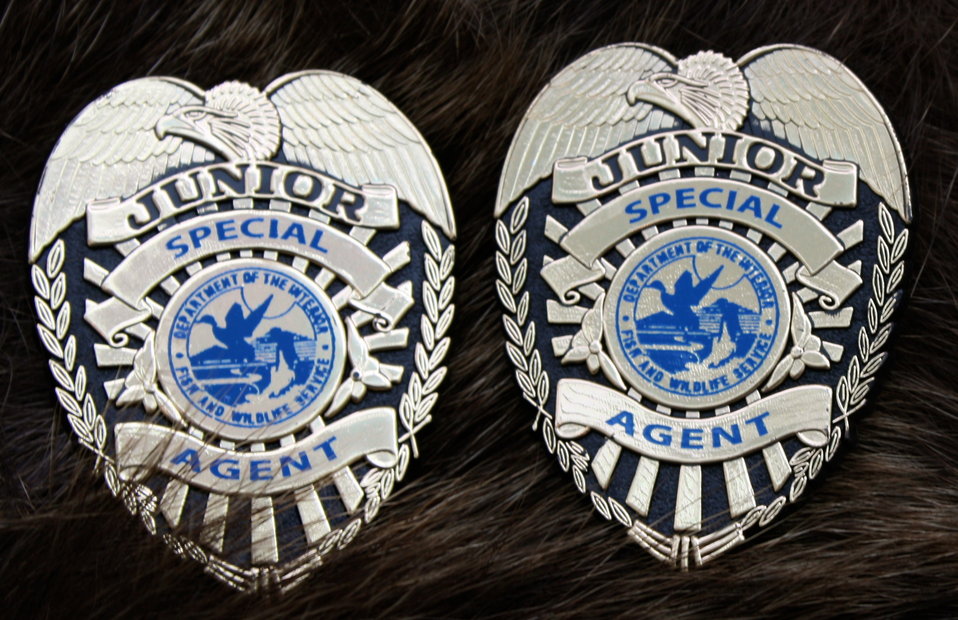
Junior Special Agent Badge